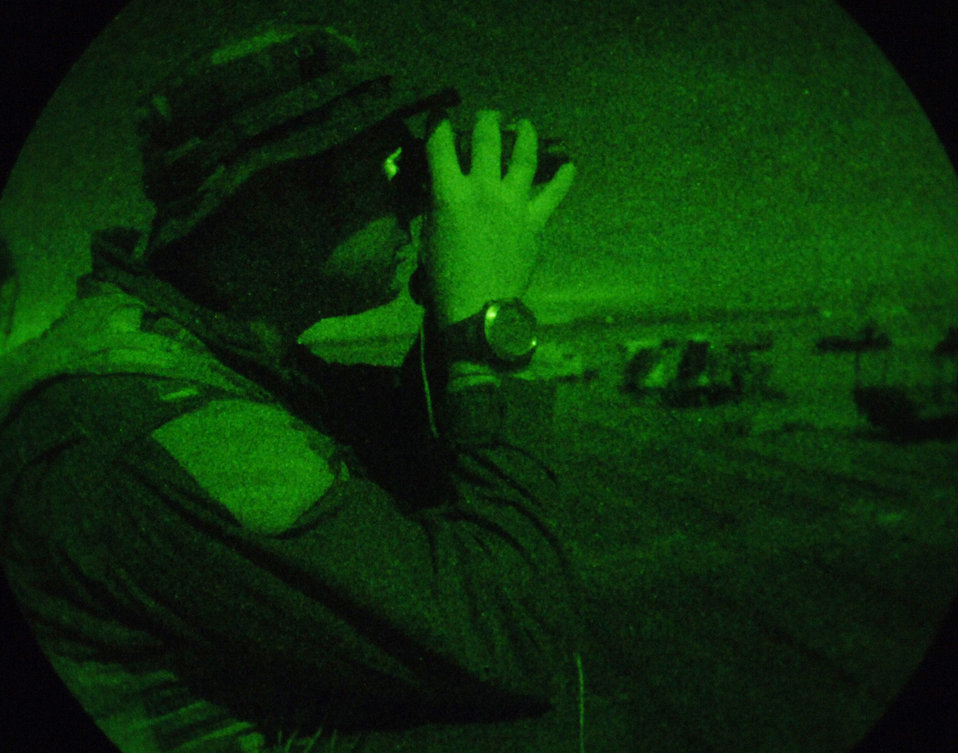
Atlantic Rescue

Captain Justin Williams searches for enemy role-players on a night-rescue scenario during Exercise Atlantic Rescue at Avon Park Air Force Range, Fla., Nov. 1. He is an F-15E Strike Eagle weapons systems operator stationed at Langley Air Force Base, Va.